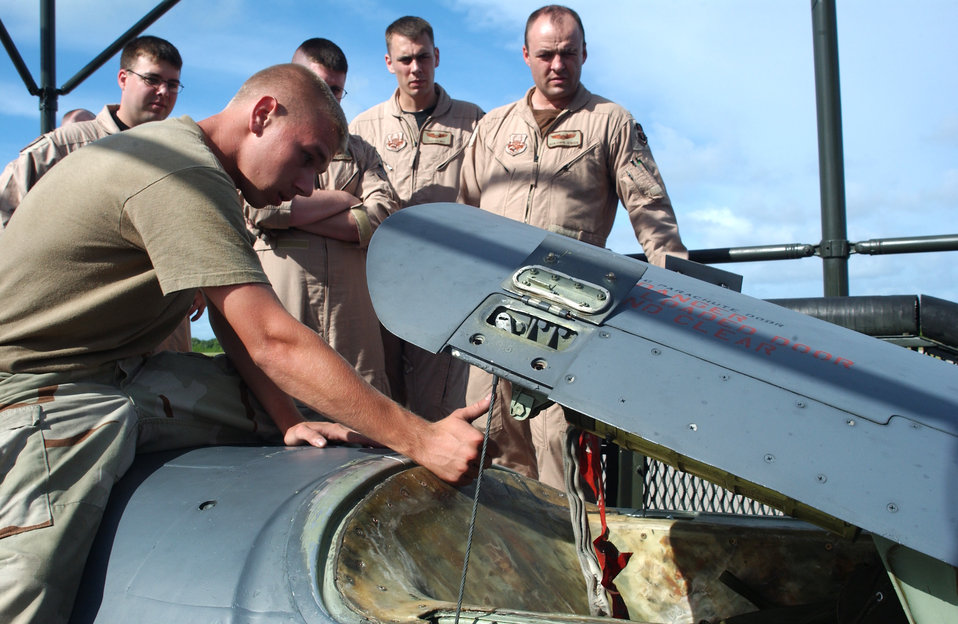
What a drag

OPERATION ENDURING FREEDOM - Airman 1st Class John Harris shows an aircrew how to load a drag chute on a B-52 Stratofortress bomber at a forward-deployed location. Aircraft servicing training is conducted periodically for aircrews by maintainers. The crews require the ground training in the event they land without maintenance support and have to service the aircraft themselves. Airman Harris is a crew chief deployed to the 40th Expeditionary Maintenance Squadron from Minot Air Force Base, N.D.